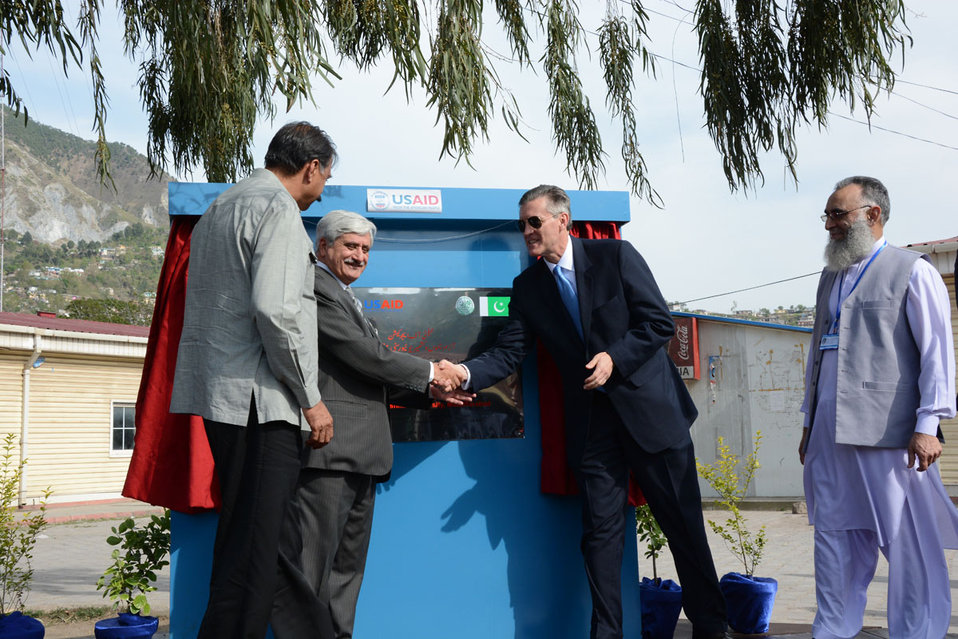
The United States Ambassador to Pakistan, Richard Olson broke ground for a U.S. funded construction of a new Faculty of Education building in Muzaffarabad, AJK. 31